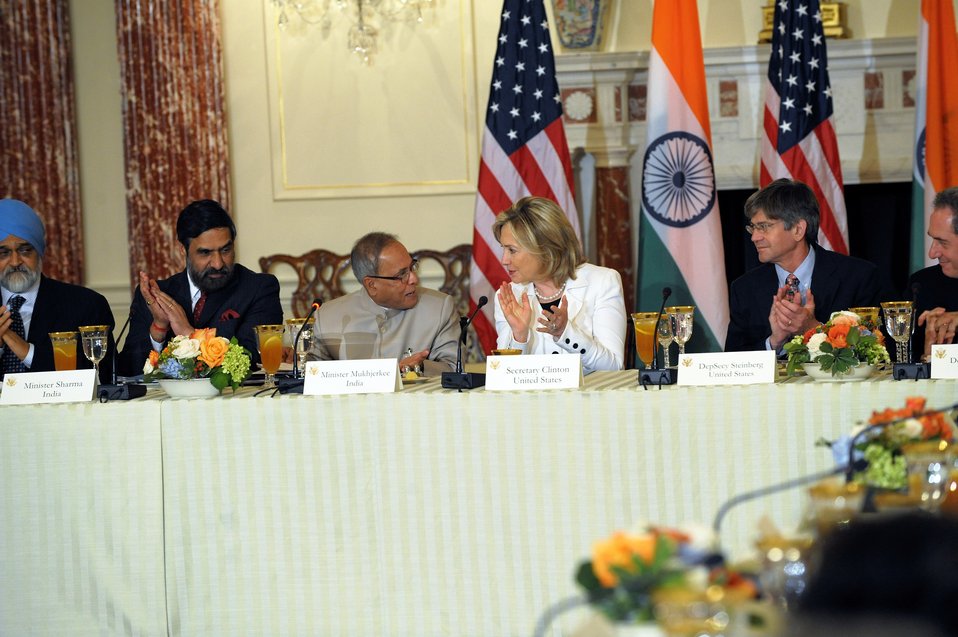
Indian Ministers, Secretary Clinton, and Deputy Secretary Steinberg Listen to Remarks

(Left to right): Indian Deputy Chairman of the Planning Commission Montek Singh Ahluwalia, Indian Commerce Minister Anand Sharma, Indian Finance Minister Pranab Mukherjee, U.S. Secretary of State Hillary Rodham Clinton, and U.S. Deputy Secretary James Steinberg listen to remarks at the U.S.-India CEO Forum at the U.S. Department of State in Washington, D.C., on June 22, 2010.